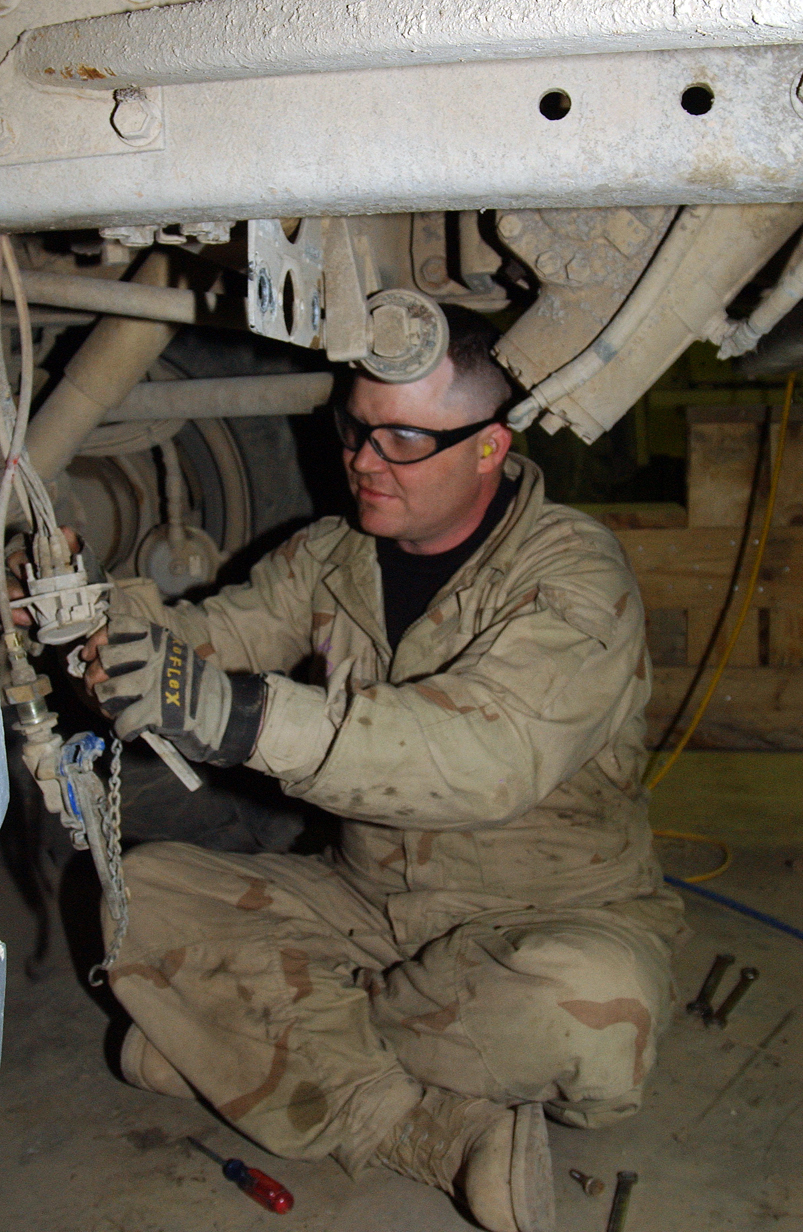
Airmen add armor to Army vehicles

BALAD AIR BASE, Iraq -- Staff Sgt. Fulton Morris pulls down air lines while serving an Army vehicle. He is a 732nd Expeditionary Logistics Readiness Squadron general purpose mechanic deployed from Dover Air Force Base, Del.